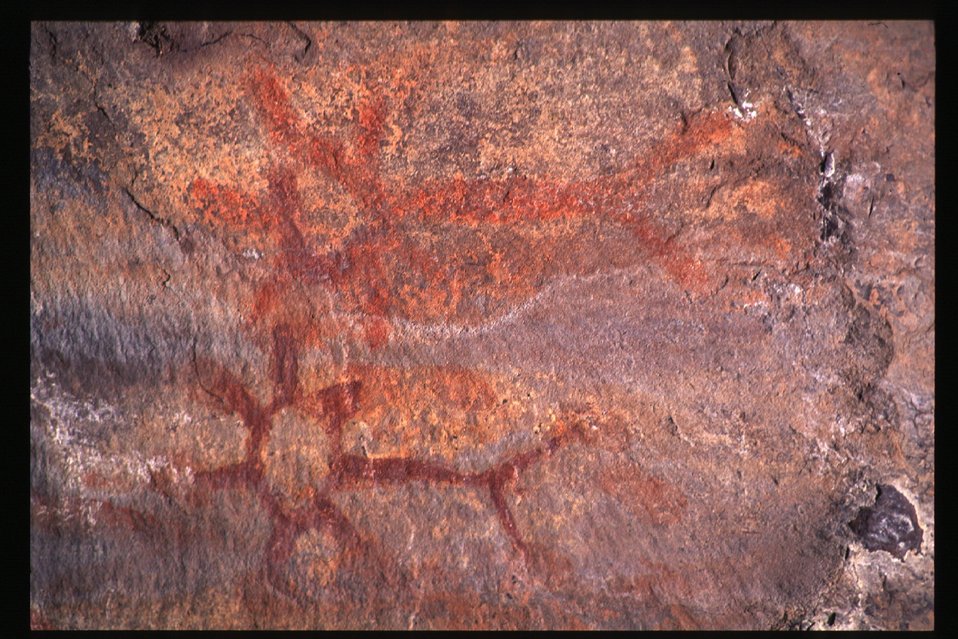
Petroglyphs Lower Salmon River Cottonwood Field Office UCSC Upper Columbia Salmon Clearwater District